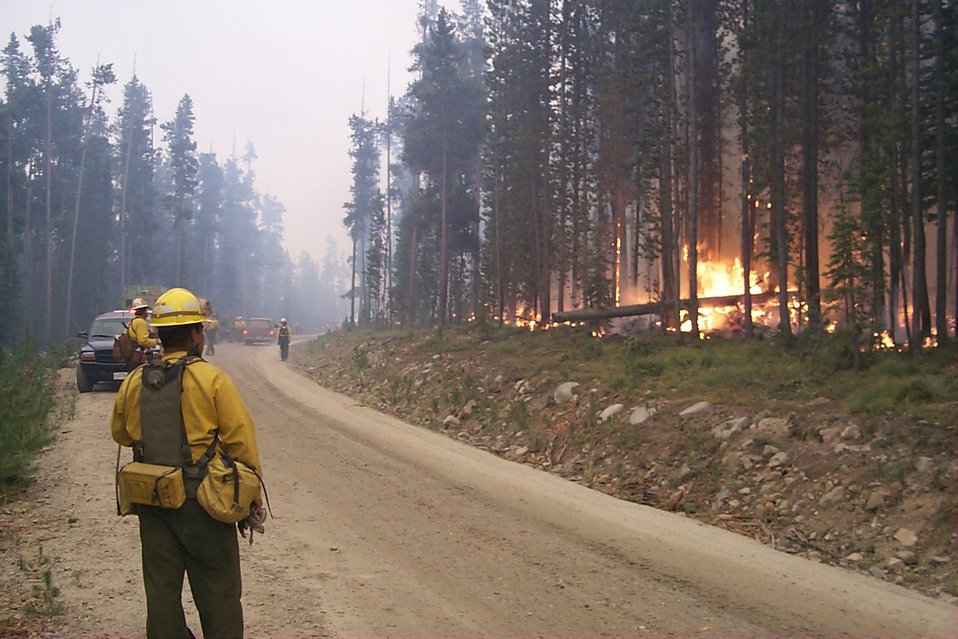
Fire fighters holding line Fire Clearwater Fire Salmon Field Office USRD Upper Snake River District